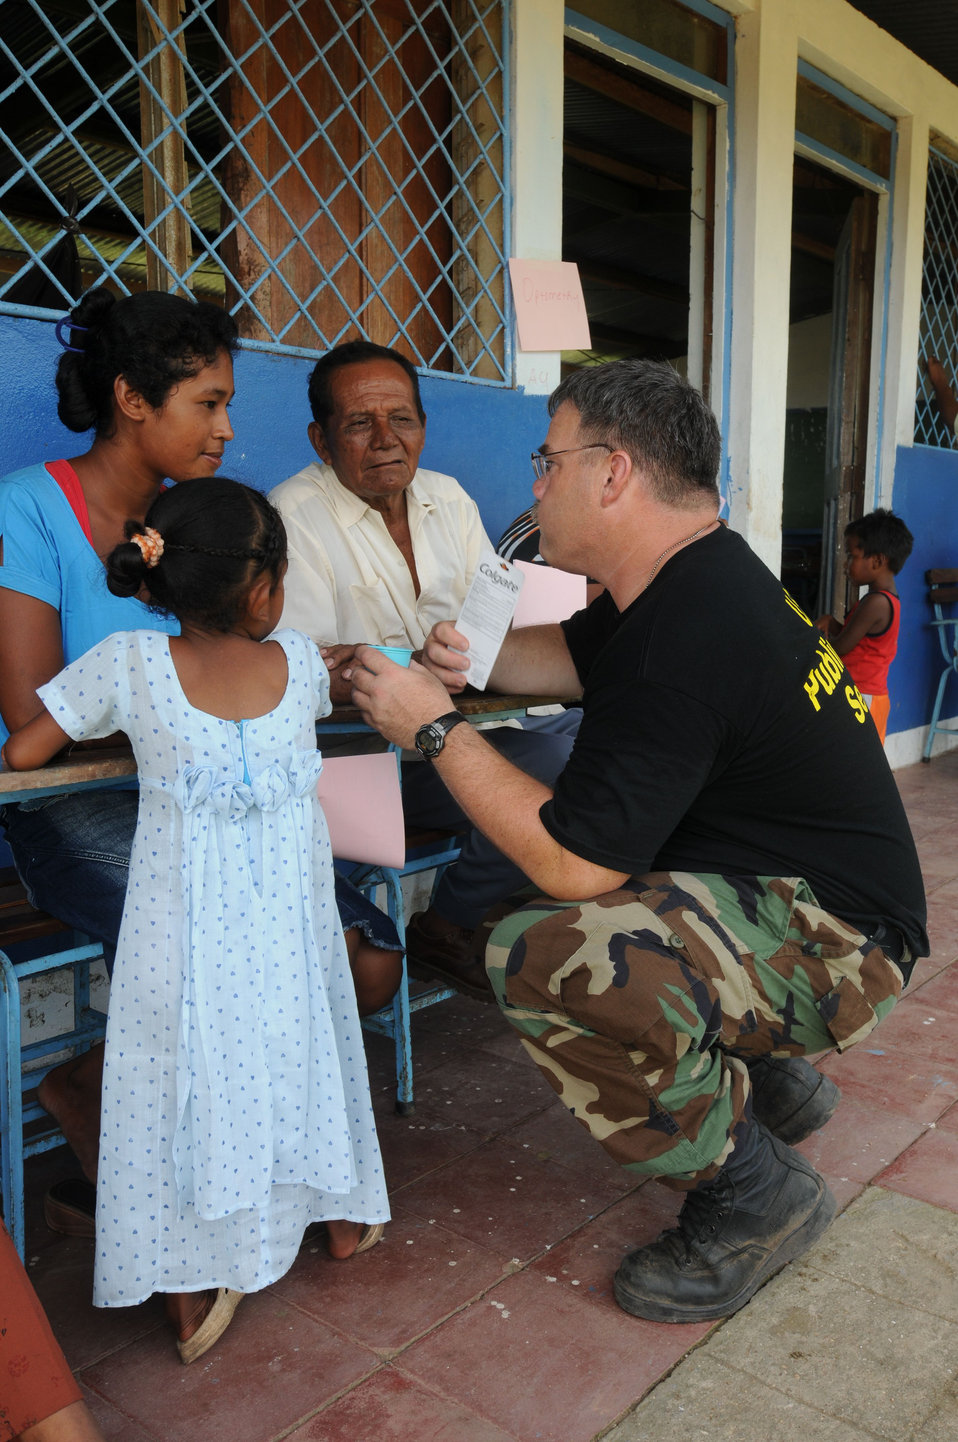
This 2008 photograph depicts U.S. Public Health Service (USPHS), Cmdr. Dale Bates, talking to a female patient in Puerto Cabezas, Nicaragua, during operation Continuing Promise (CP) 2008. In this particular view, Cmdr. Bates appears to be handing the patient a blue plastic cup with an unknown contents, as well as a Colgate dental-related brochure.